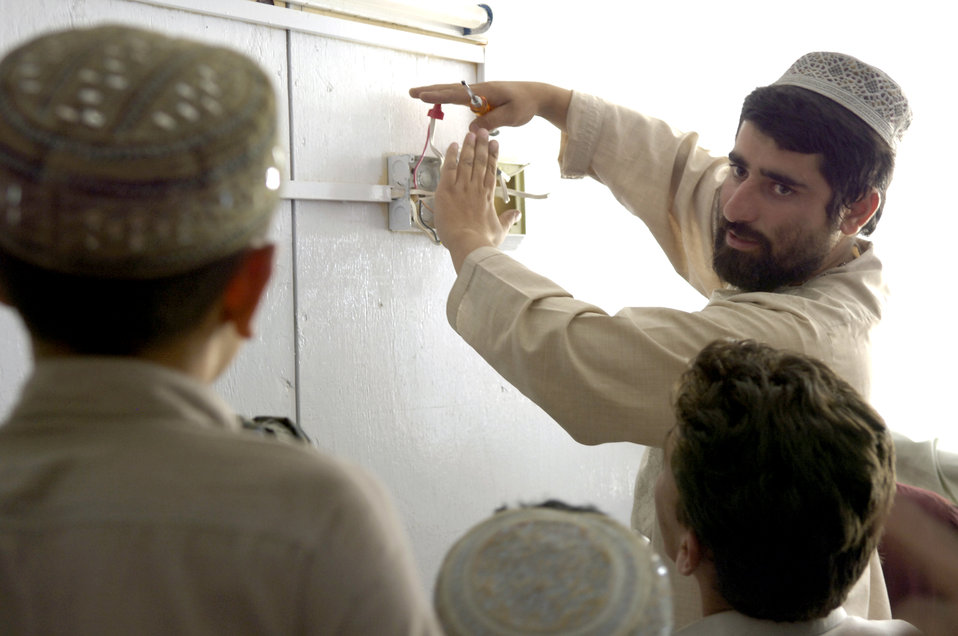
Airmen teach skills to Afghans to rebuild their country

Saeed explains the components of an electrical box to Afghan students at the Qalat Provincial Reconstruction Team's Trade School on Monday, June 12. The instructors teach local Afghans skills they can use to get jobs and help rebuild their country. Saeed is a former plumbing and carpentry trade school student who returned eight months ago to teach at the school.